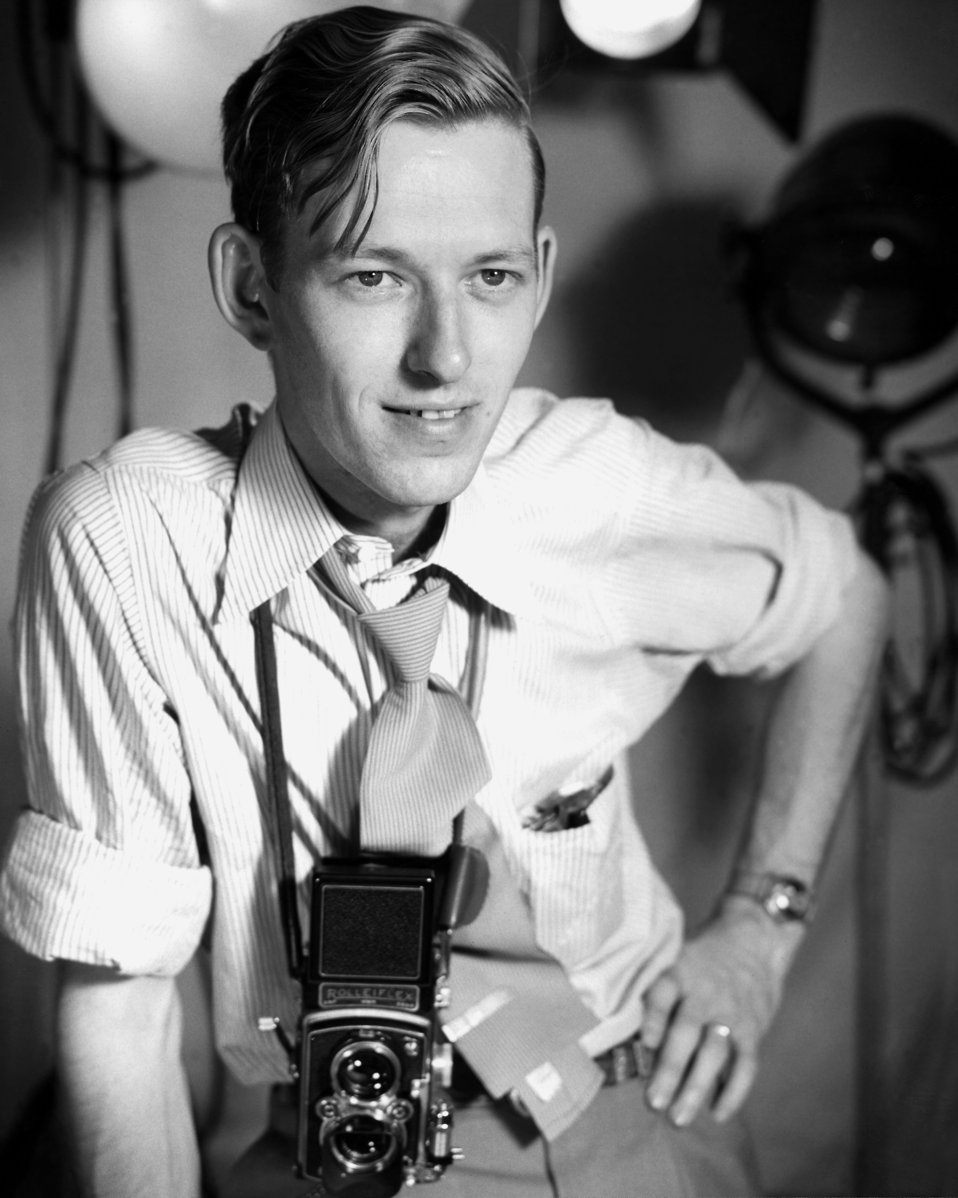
Ed Westcott 1949 Oak Ridge

5527 DOE photo L.S. Chastagner 5-5-1949 Oak Ridge Tennessee